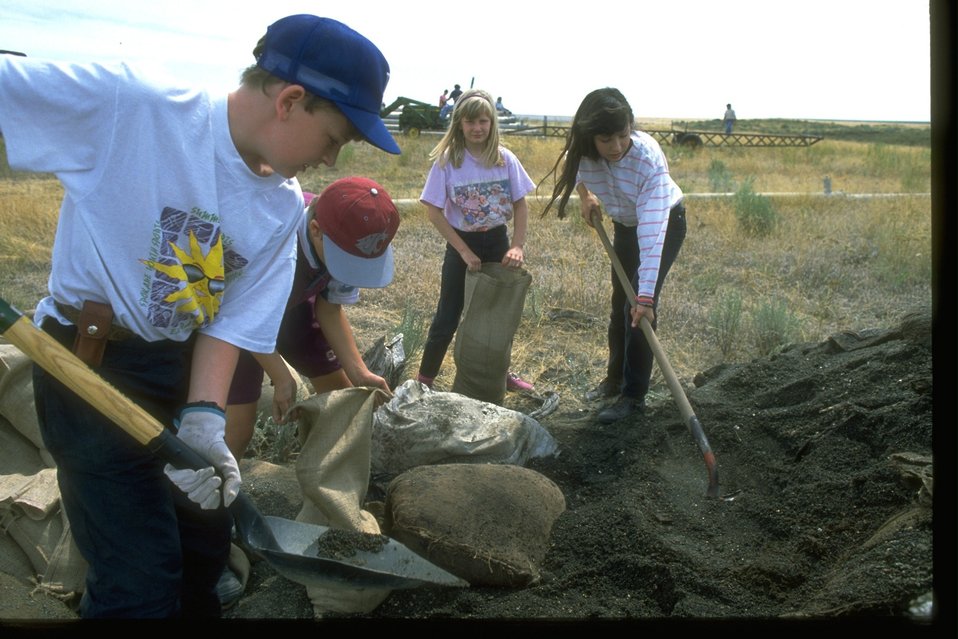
Volunteers help construct a water pipline to improve wildlife habitat in Lincoln County, Washington.